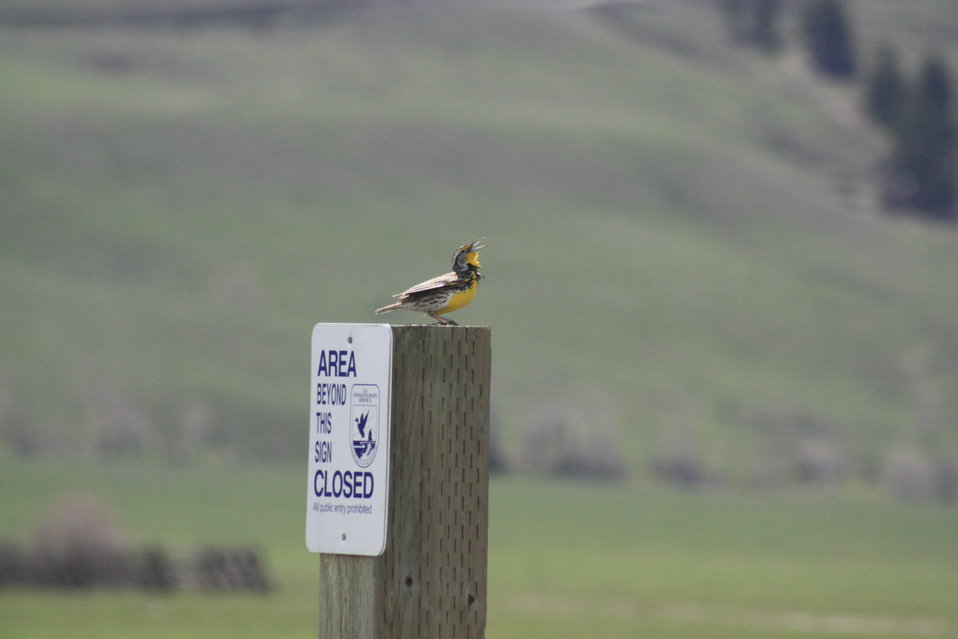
A Flutelike Melody

The State of Wyoming designated the Western Meadowlark as its offiicial state bird in 1927. In spring and summer, males sing out from atop fence posts, bushes, power lines, and other high points.

Credit: USFWS / Ann Hough, National Elk Refuge volunteer